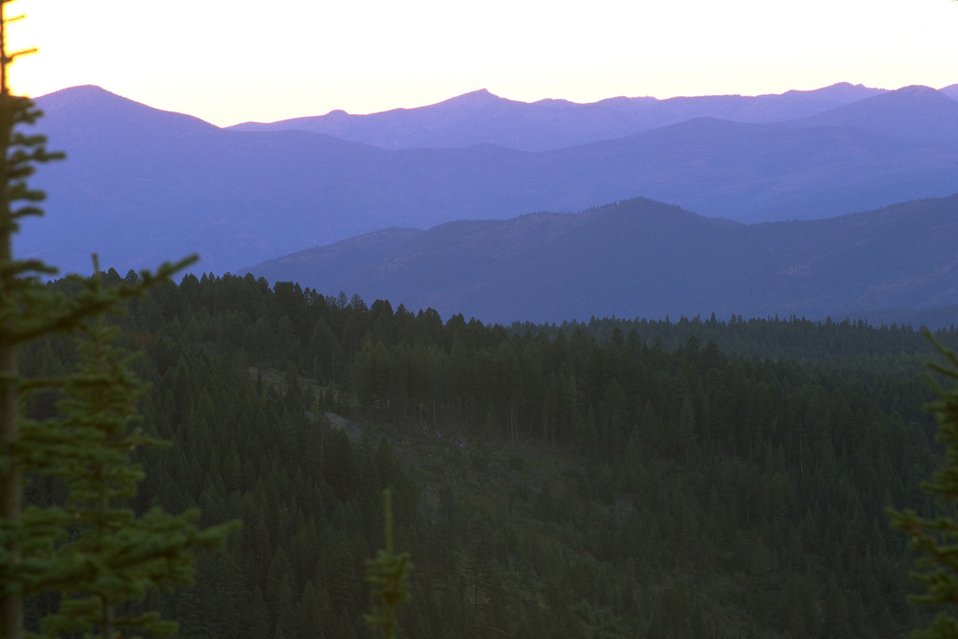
Garnet Back Country Byway--view from overlook